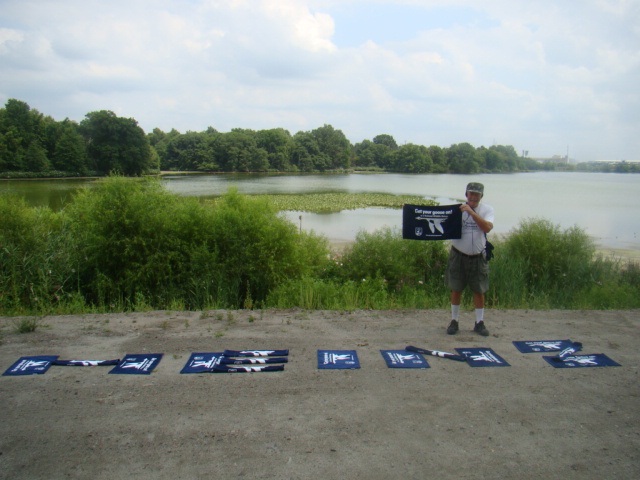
Get Your Goose On!

A visitor Gets His Goose On during a hike.